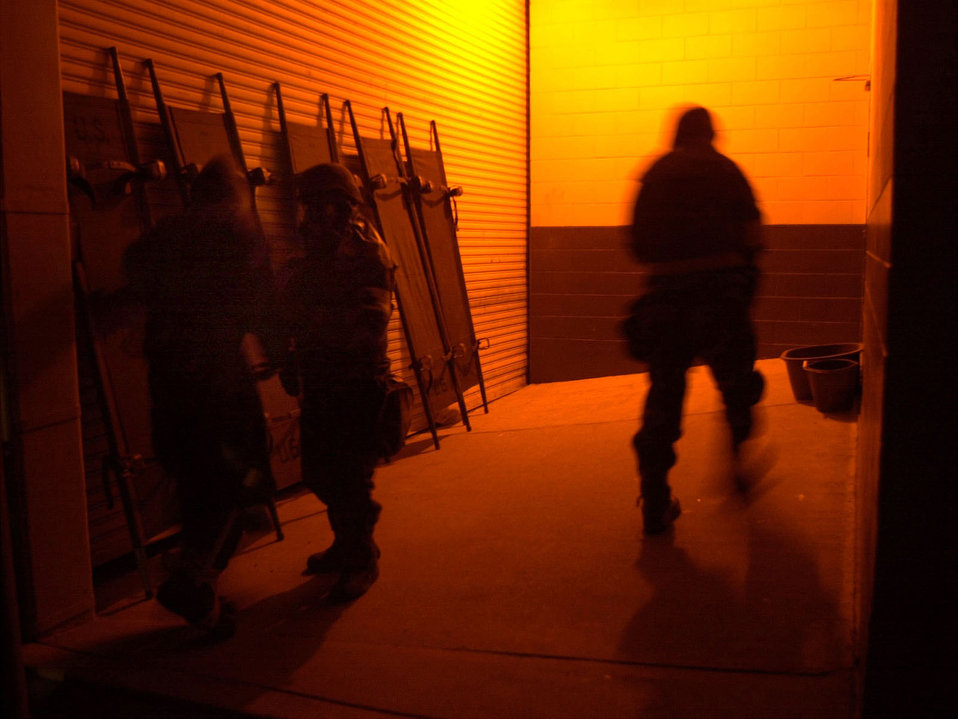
Wolfpack readiness

KUNSAN AIR BASE, South Korea -- Members assigned to the 8th Medical group, approach the controlled entrance to the medical clinic. The Medical Group and